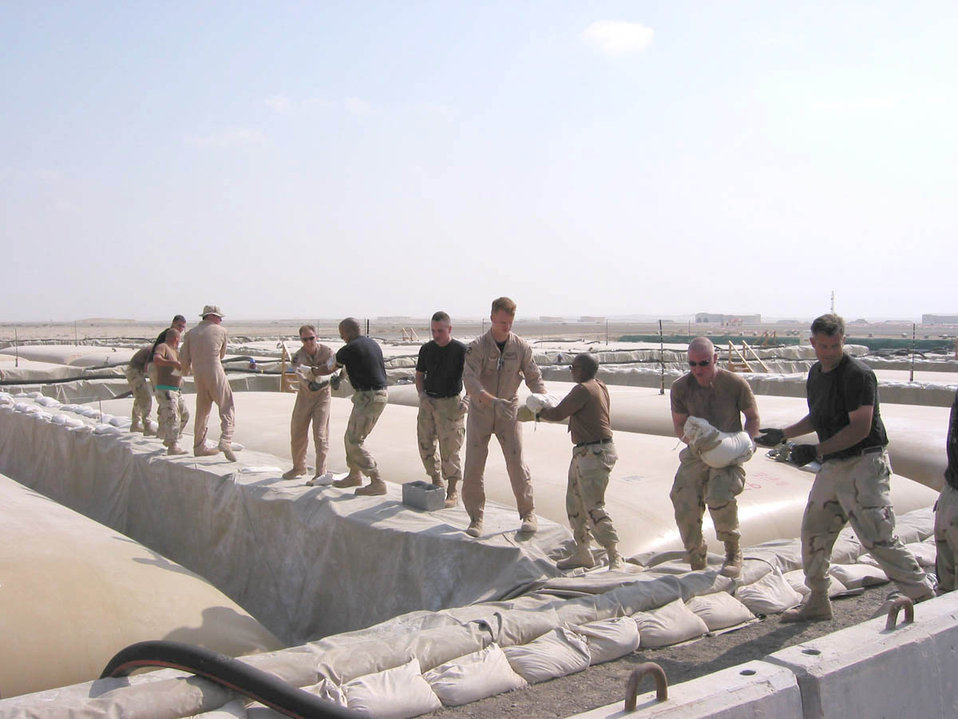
Assembly line

OPERATION ENDURING FREEDOM -- Airmen from the 380th Expeditionary Logistics Readiness Squadron's petroleum, oil and lubricants section, plus volunteers from the 380th Air Expeditionary Wing, hand sandbags down the line. The sandbags will secure liners as part of the ongoing fuel farm expansion project at a forward-deployed location.